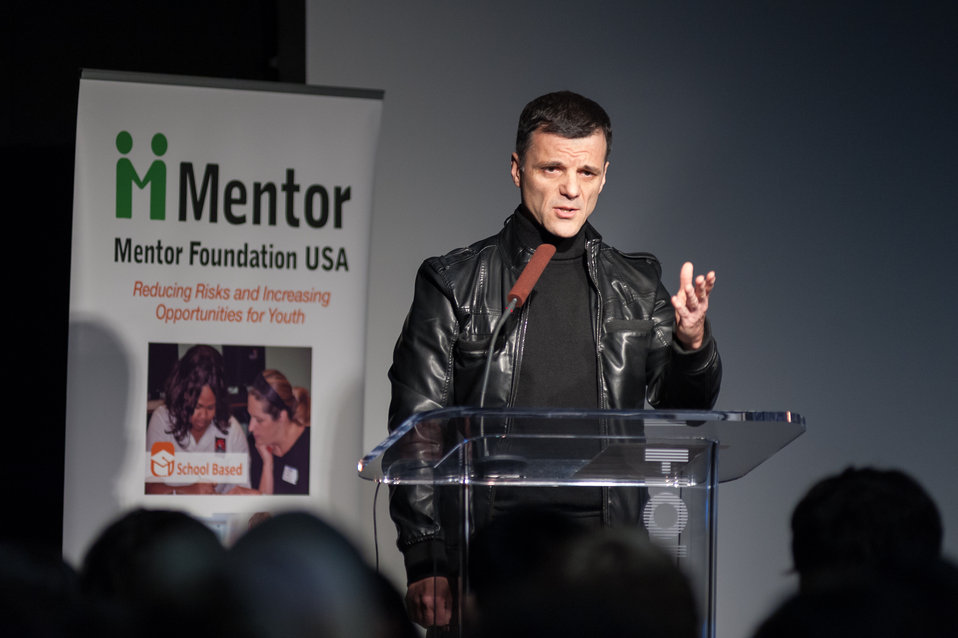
Mentor NDFW Event 2014

Mentor Foundation USA, in partnership with the National Institute on Drug Abuse (NIDA) and other key partners hosted a Youth Drug Facts Rally at the House of Sweden on Thursday, 30th January 2014. Approximately 200 students from five local high schools attended and had the opportunity to interact with top U.S. scientific experts, including Dr. Ruben Baler of NIDA and inspiring guest speakers to “shatter the myths” about drugs and substance abuse, while pledging to stay drug-free.